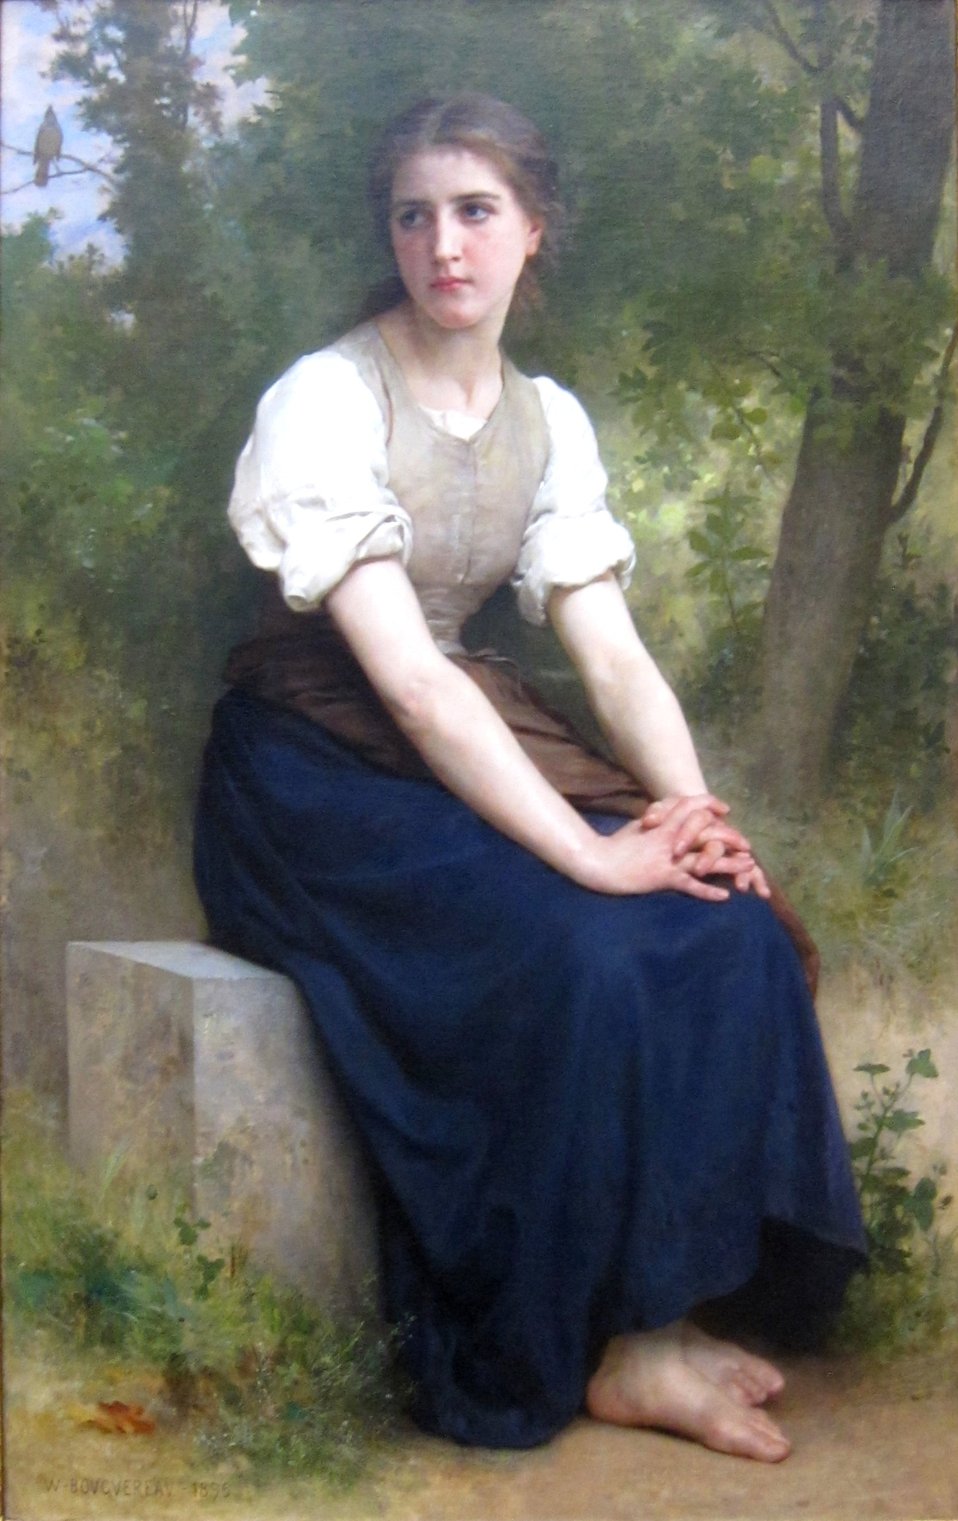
'The Song of the Nightingale' by William-Adolphe Bouguereau, Dayton Art Institute